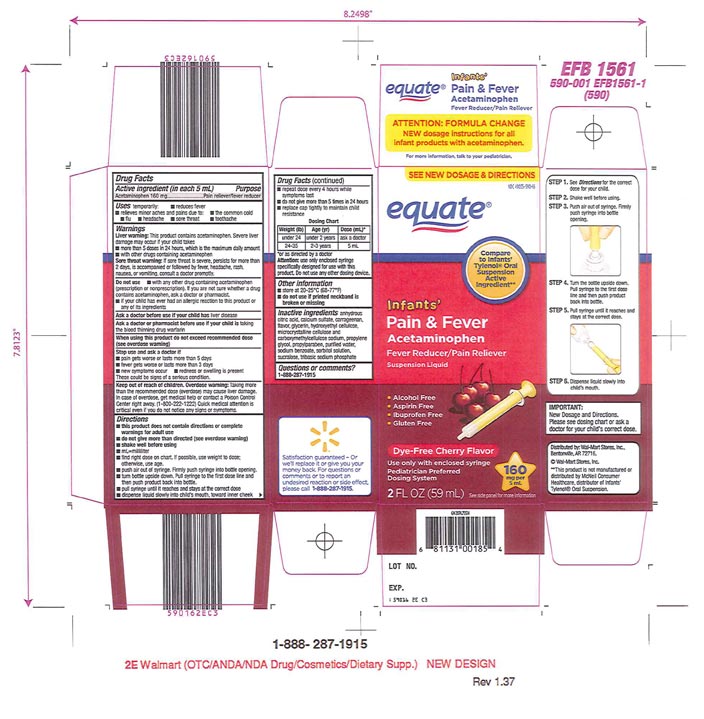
Recalled - Acetaminophen infant suspension liquid

November 1, 2013 – Product Recall – Perrigo Initiates Nationwide Voluntary Product Recall of Acetaminophen Infant Suspension Liquid, 160 Mg/5 Ml, Due to a Potential Defect with the Co-packaged Oral Syringe.